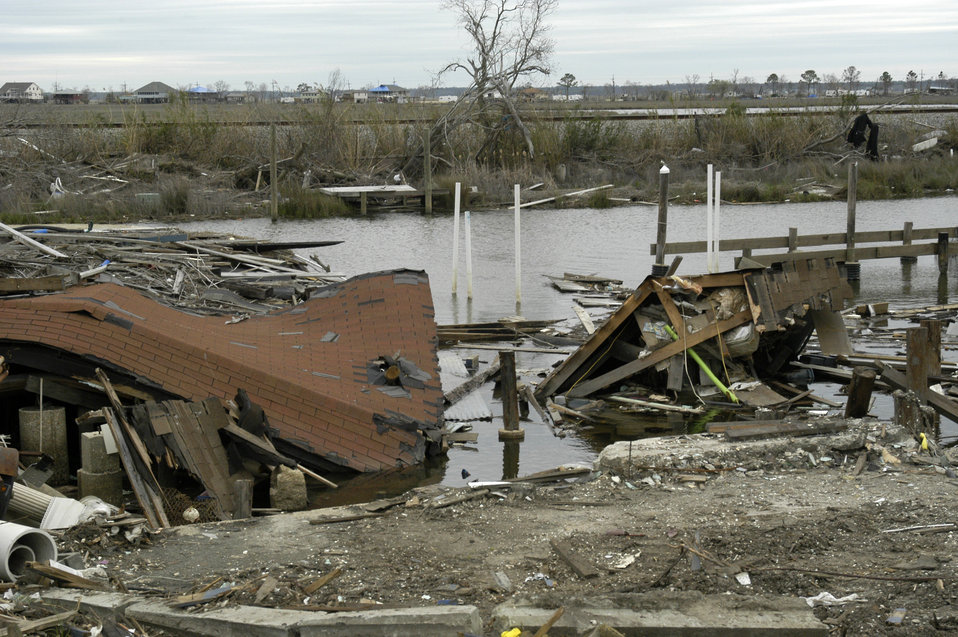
Homes built along the many canals in New Orleans, LA, were washed away by Hurricane Katrina’s 20-foot storm surge that overwhelmed the city’s levees. Hurricane Katrina was the 6th strongest hurricane in U.S. history and the 5th deadliest. Katrina made landfall on Monday morning, August 29, 2005 as a Category 3 hurricane with sustained winds of 125 mph with over a 20-foot storm surge. Katrina caused catastrophic damage over 90 thousand square miles across Louisiana with an estimated $75 billion dollars in damage. The total economic impact to the Gulf Coast was estimated at over $150 billion. 80% of New Orleans, LA, was underwater with some areas more than 20 feet deep. Less than a month later southern Louisiana was struck by a second Category 3 hurricane Rita inflicting more damage in the southwestern areas of Louisiana adding an addition $12 billion worth of damage to the already beleaguered state. The U.S. Army Corps of Engineers (USACE) under the auspices of FEMA was the lead service in providing assistance to the citizens of Louisiana. The U.S. Department of Agriculture (USDA) supplied emergency food aid, emergency loan assistance to farmers and home owners, and USDA personnel from around the nation volunteered their time and muscle to aid in the recovery operations.